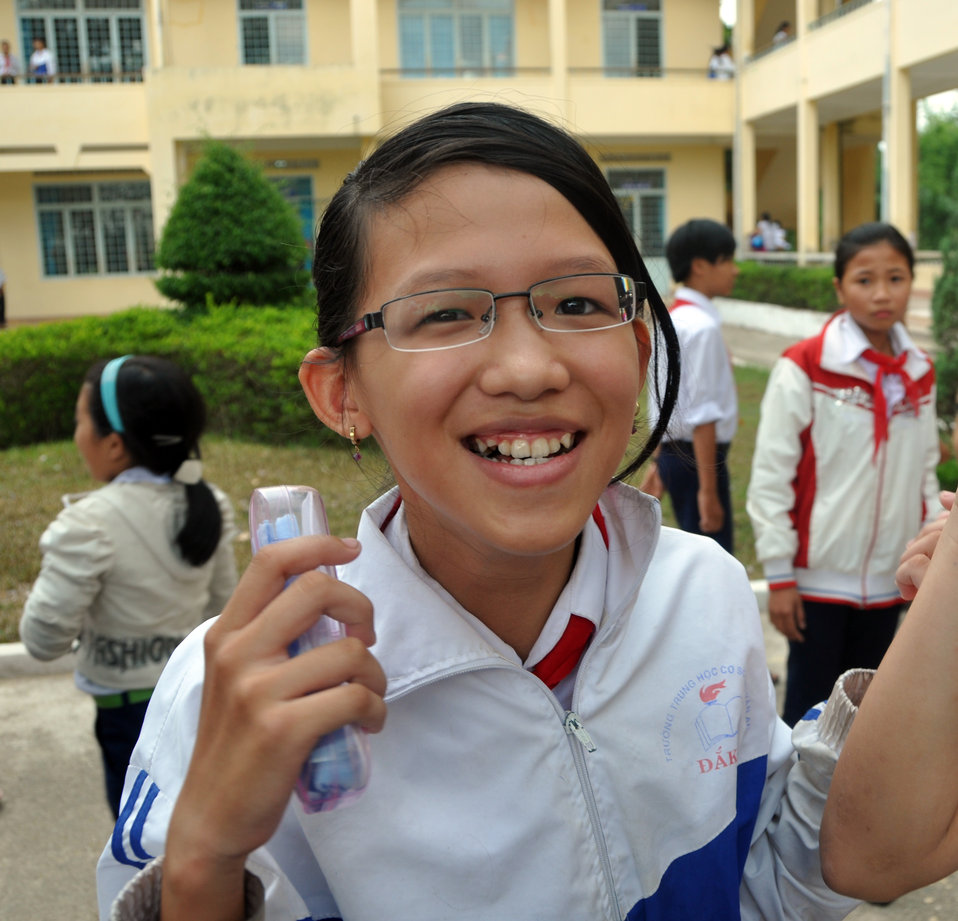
Checking new student eyeglasses in Kon Tum

Eyeglasses examination at Luong The Vinh School, Kon Tum Province